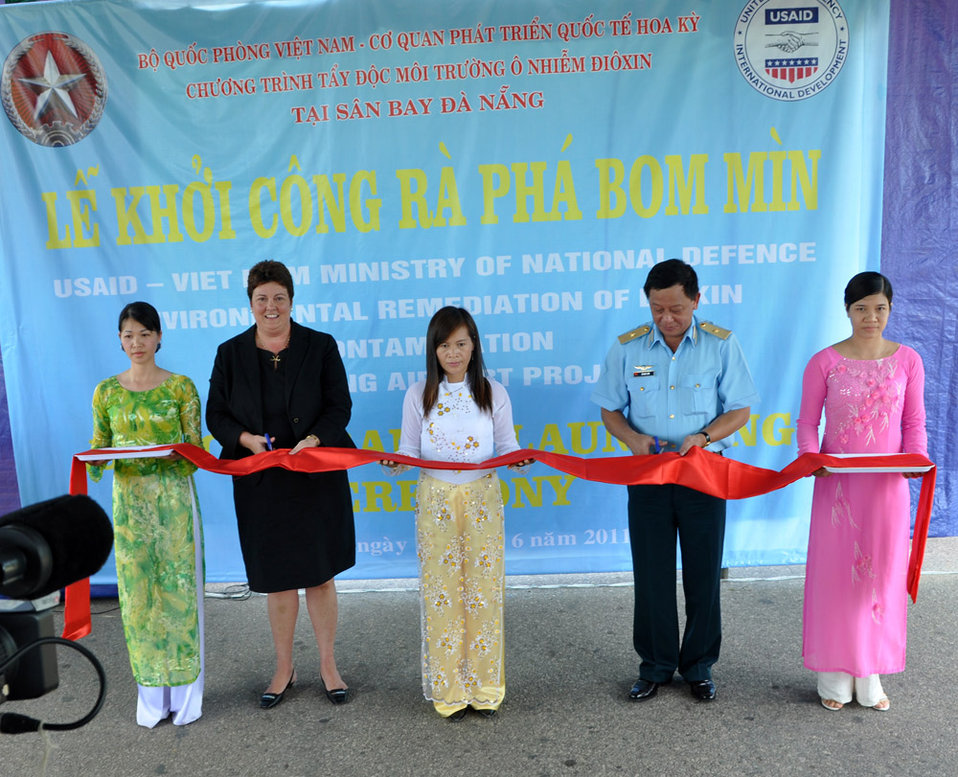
UXO clearance ceremony, June 17, 2011, in Danang, Vietnam.